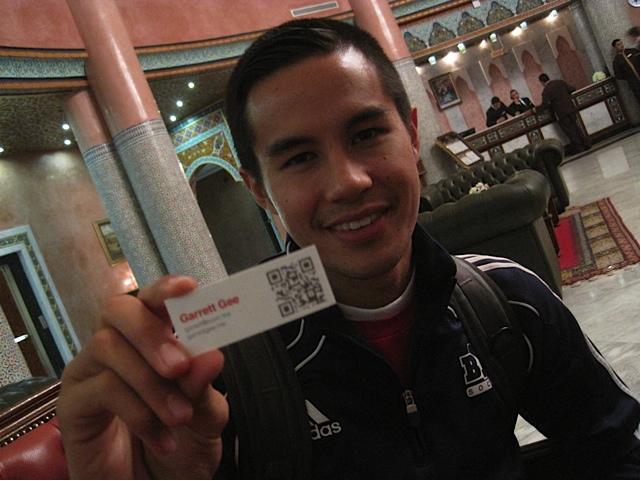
Garrett Gee Shares His Experience as a Presenter

Garrett Gee, a Brigham Young University student who developed the popular iPhone app for reading QR Codes, was one of the American entrepreneurs who shared his experience as a presenter in a workshop during the second U.S. – Maghreb Entrepreneurship Conference in Morocco, January 16-18, 2012.